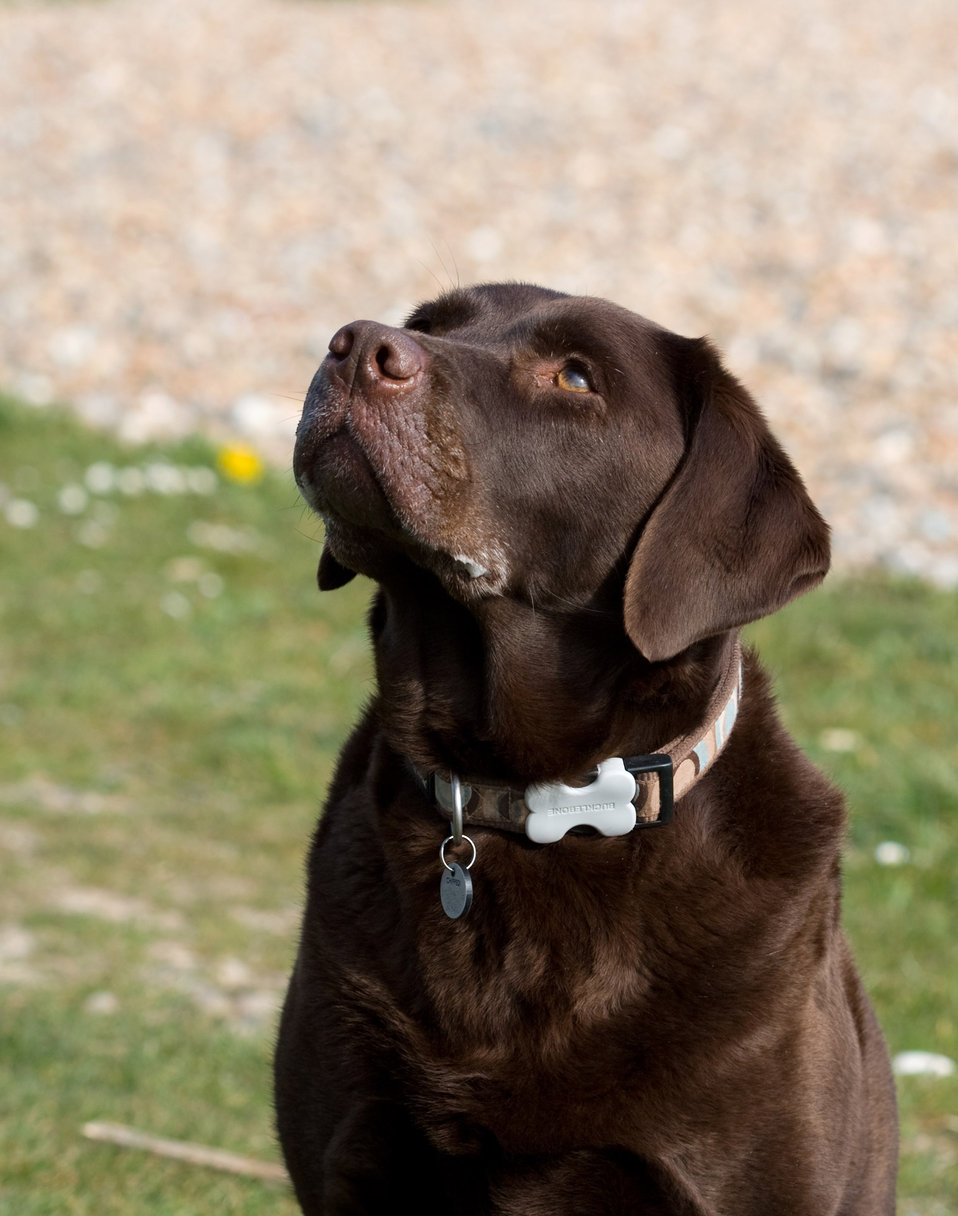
Labrador dog portrait

Close-up portrait of a beautiful chocolate brown labrador retriever dog.